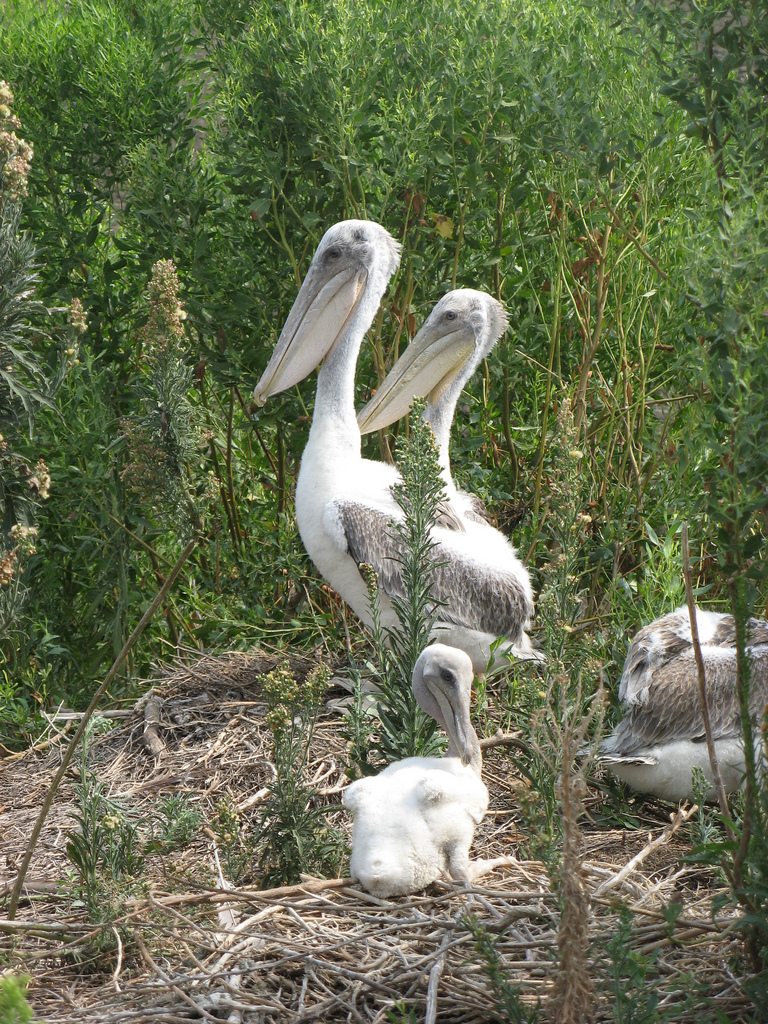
Alabama Young Pelicans by Catherine Hibbard, USFWS